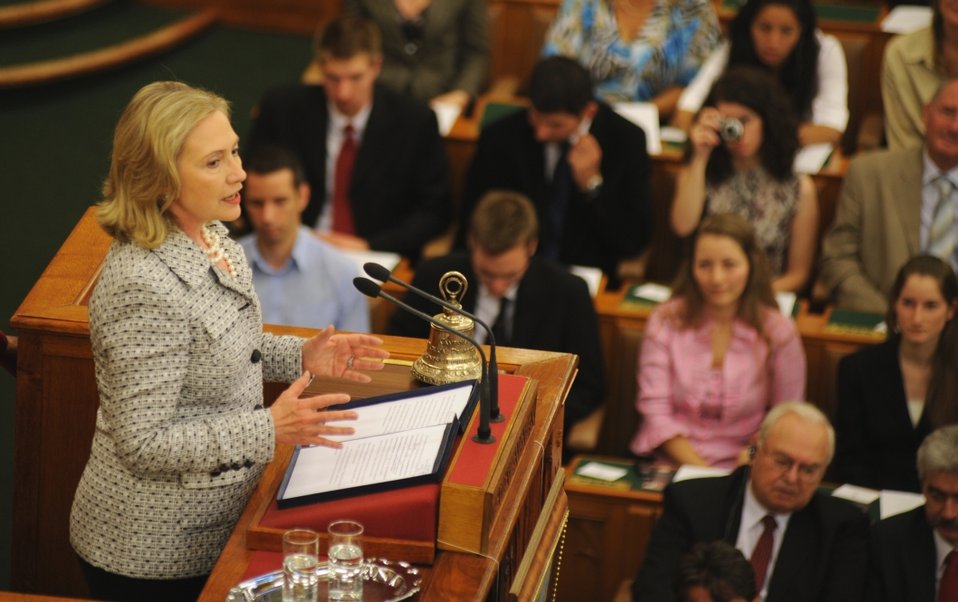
Secretary Clinton Delivers Her Speech During the Inauguration of the Tom Lantos Institute

U.S. Secretary of State Hillary Rodham Clinton delivers her speech during the inauguration of the Tom Lantos Institute in Budapest, Hungary, June 30, 2011.